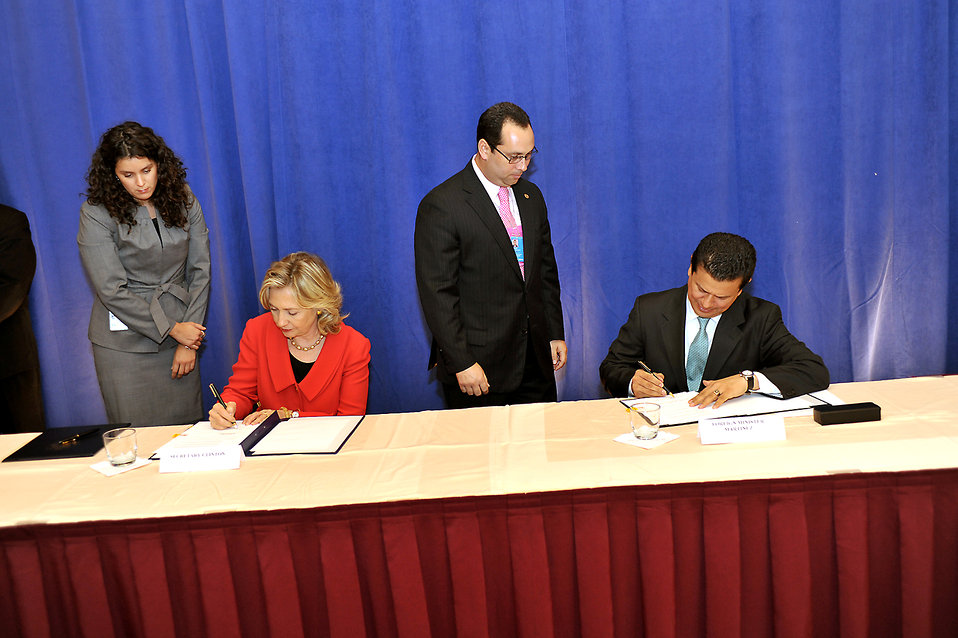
Secretary Clinton and Salvadoran Prime Minister Martinez Sign a Memorandum of Understanding

U.S. Secretary of State Hillary Rodham Clinton and El Salvador Prime Minister Martinez sign a memorandum of understanding for the Building Remittance Investment for Development Growth and Entrepreneurship (BRIDGE) Initiative with Honduras and El Salvador
iat the Hemsley Hotel in New York, New York, on September 22, 2010.